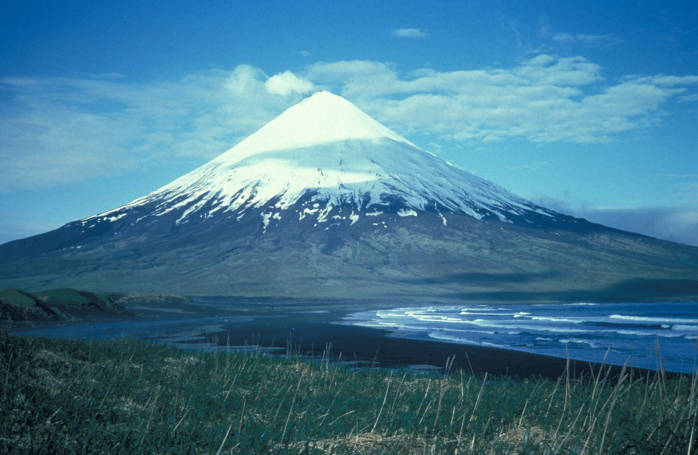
Mt. Cleveland, Chuginadak Island

Alaska Maritime National Wildlife Refuge